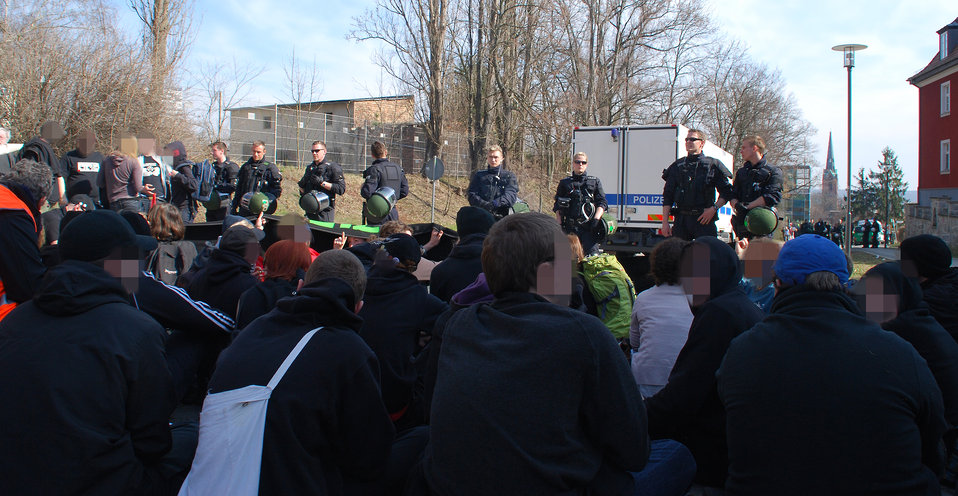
Proteste gegen den Nazi-Aufmarsch am 24.3.2012 in Frankfurt (Oder)